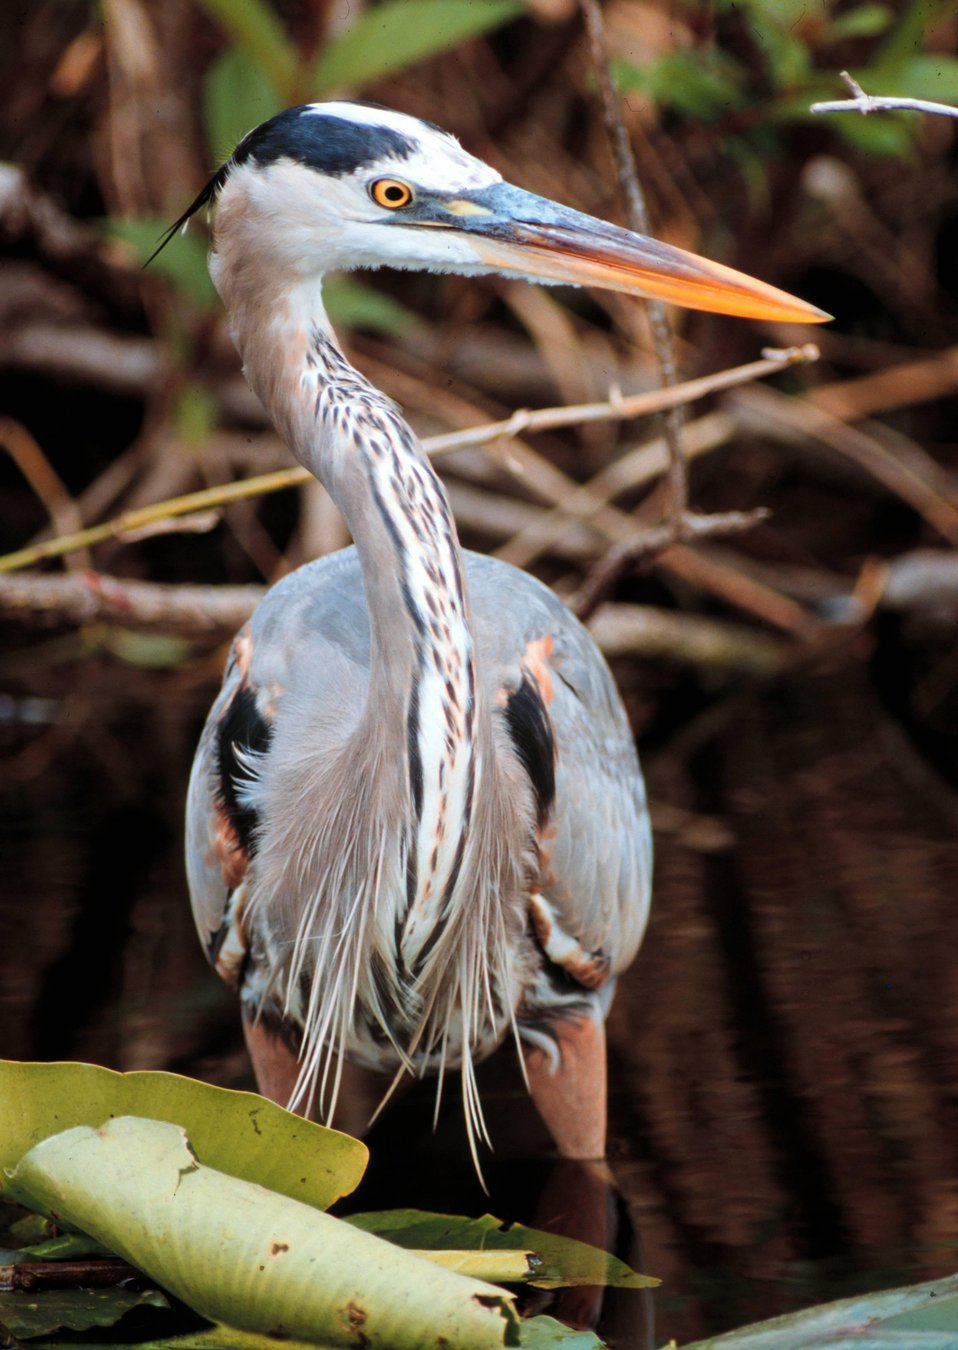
A GREAT BLUE HERON BEING OBSERVED AT THE SAVANNAH RIVER SITE.

THIS IS ONE OF THE SPECIES OF BIRDS AT THE SITE THAT IS BEING TRACKED AND STUDIED BY THE SAVANNAH RIVER ECOLOGY LABORATORY. SREL PROVIDES AN EVALUATION OF THE ECOLOGICAL EFFECTS OF SRS OPERATIONS THROUGH A PROGRAM OF ECOLOGICAL RESEARCH, EDUCATION AND OUTREACH.